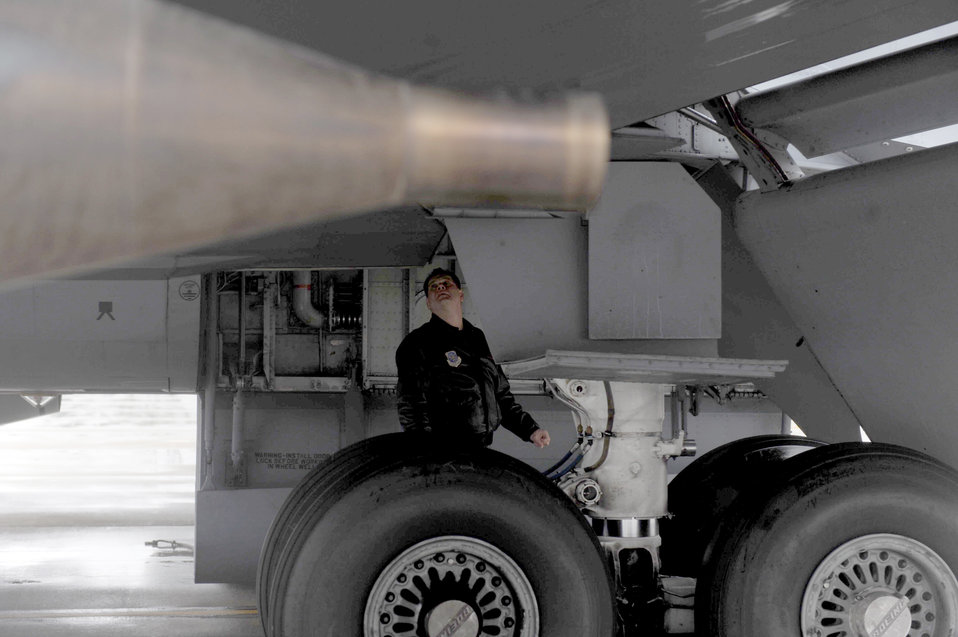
Guardsmen deploy in support of Operation Odyssey Dawn

A member of the Illinois Air National Guard's 126th Air Refueling Wing performs preflight checks on a KC-135 Stratotanker March 25, 2011, at Scott Air Force Base, Ill., in preparation for deployment in support of Operation Odyssey Dawn.